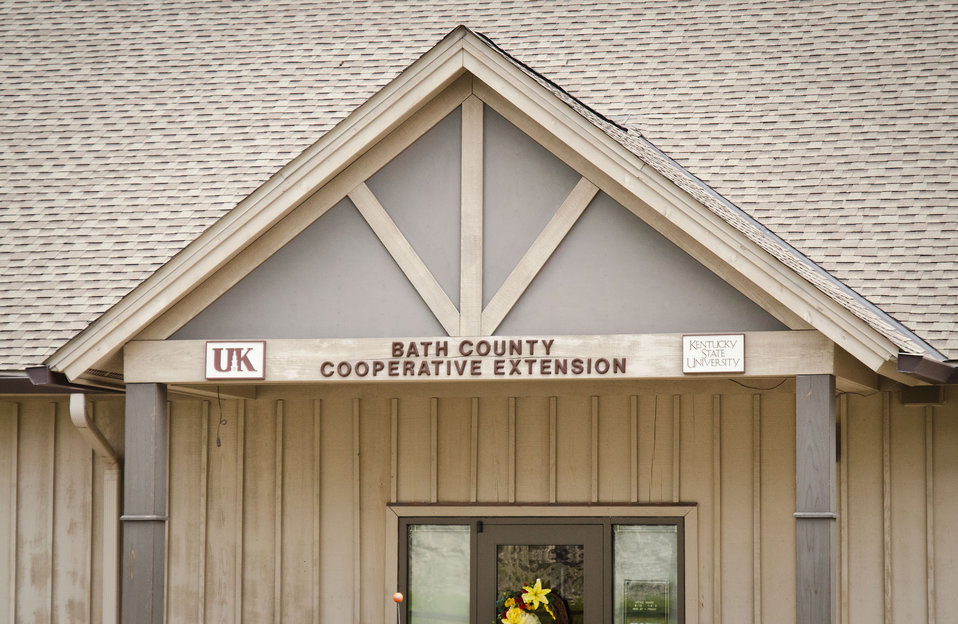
The University of Kentucky and Kentucky State University conduct classes at the Bath County Cooperative Extension, in the Bath County Agricultural Education and Marketing Center, Owingsville, KY, on Friday, July 15, 2011. The Center was the recipient of a $400,000 Rural Business Enterprise Grant. It has given farmers and producers from Bath and surrounding counties the opportunity to manufacture and market their locally grown and locally produced value-added and “Kentucky Proud” branded products, including but not limited to, fresh produce, artisan crafts and specialty food products. The Center is open year-round and allow residents to sell products in four different retail categories, including Kentucky products, regional crafts, “green” groceries and bakery/deli. Several producers expressed their gratitude for Rural Development’s assistance in making the center a reality. The project was made possible through American Recovery and Reinvestment Act of 2009 funding enacted by the 111th United States Congress in February 2009 and signed into law on February 17, 2009, by President Barack Obama.